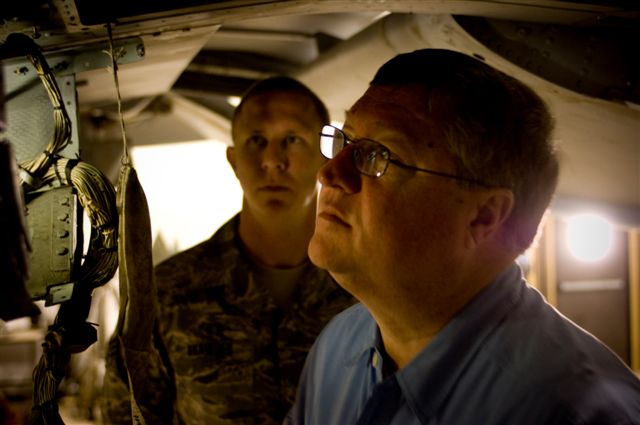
Secretary Donley visits Bagram Airmen

Secretary of the Air Force Michael B. Donley gets an up-close look at an A-10 Thunderbolt II Oct. 15 during his visit to Bagram Airfield, Afghanistan. Secretary Donley met with the A-10 maintenance unit to hear about how the maintainers are keeping this aged bird in the fight.